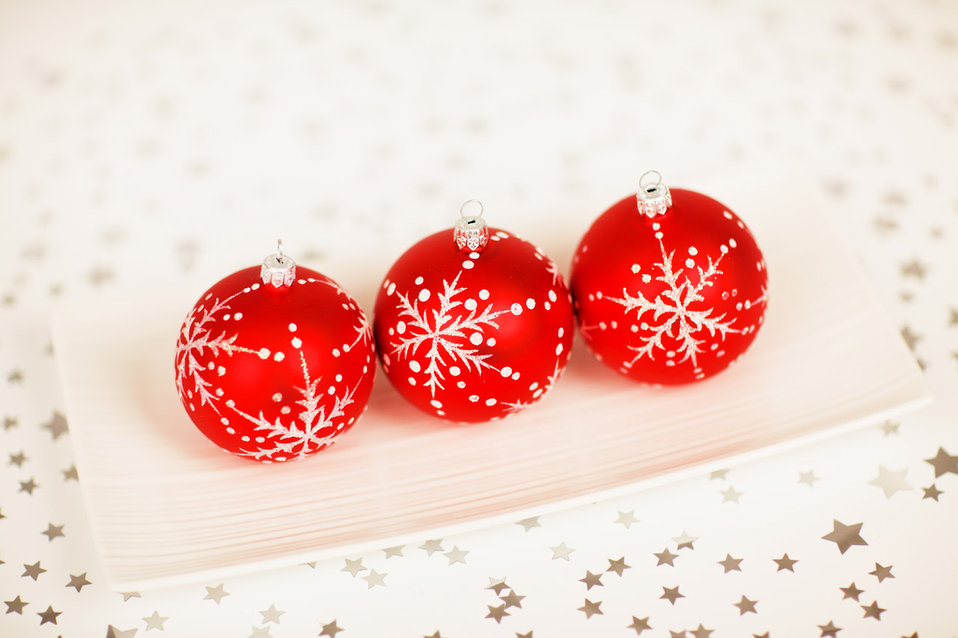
Red baubles decoration

Three red christmas baubles on plate on starry background.